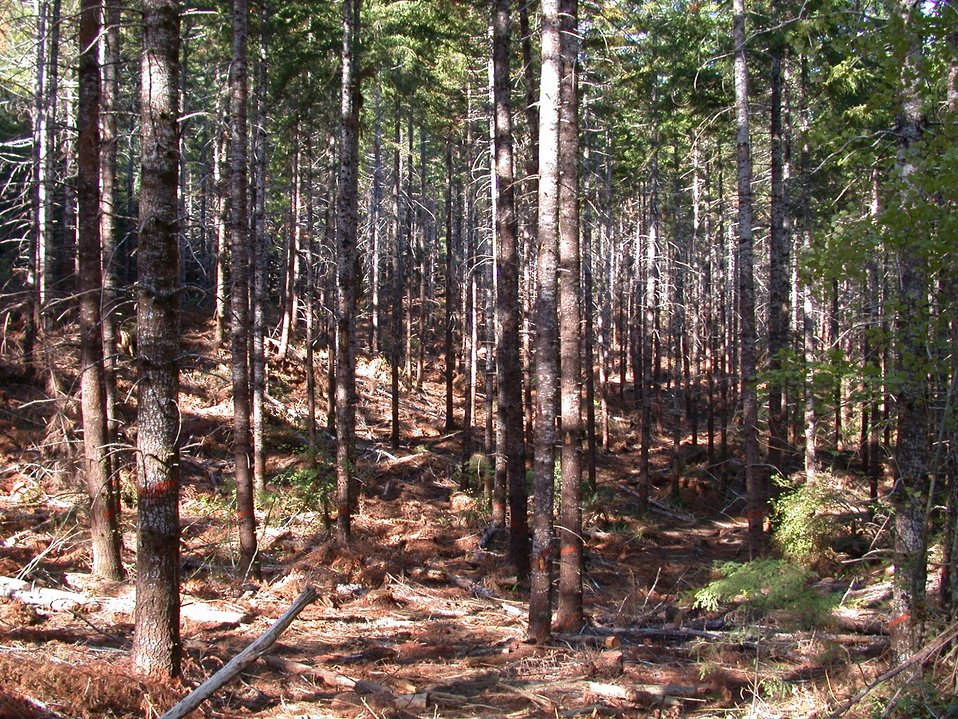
Camas East Timber Sale in Late Successional Reserve.